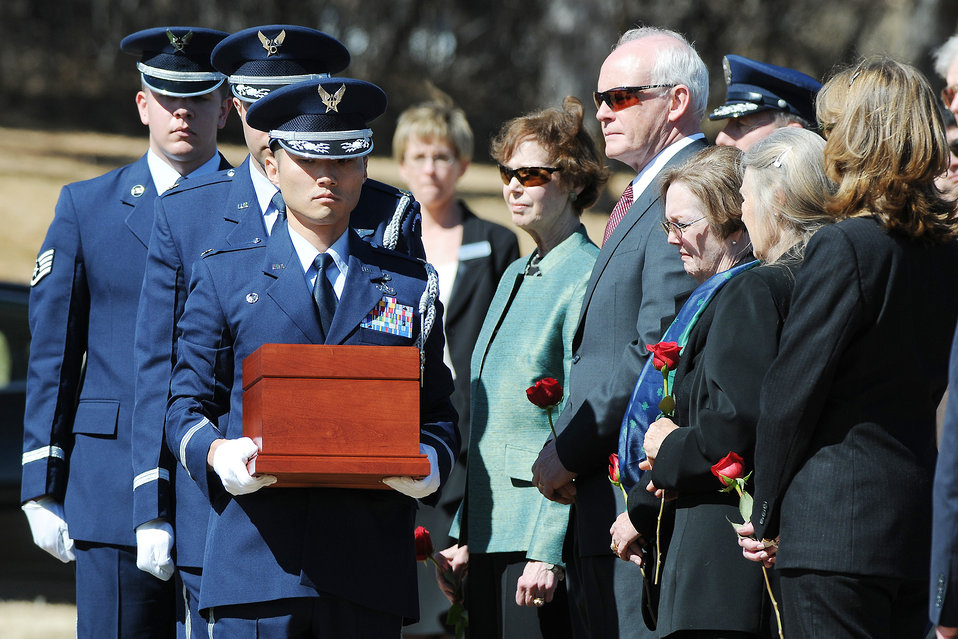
General Clark honored with service

Maj. Robert Bonner carries the remains of Lt. Gen. A.P. Clark past family members during a graveside service March 17, 2010, at the Air Force Academy Cemetery in Colorado. General Clark, who was the Academy's sixth superintendent from Aug. 1, 1970 to July 31, 1974, was a 1936 graduate of West Point and went on to a flying career after graduation.